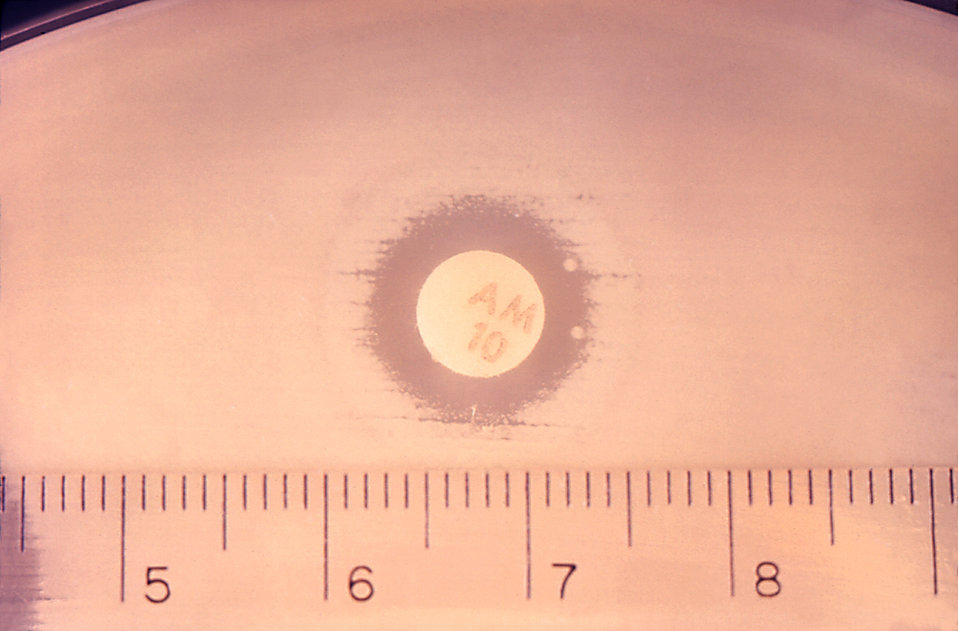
This agar petri dish culture is growing ampicillin-resistant E. coli and Proteus sp. bacterial colonies.